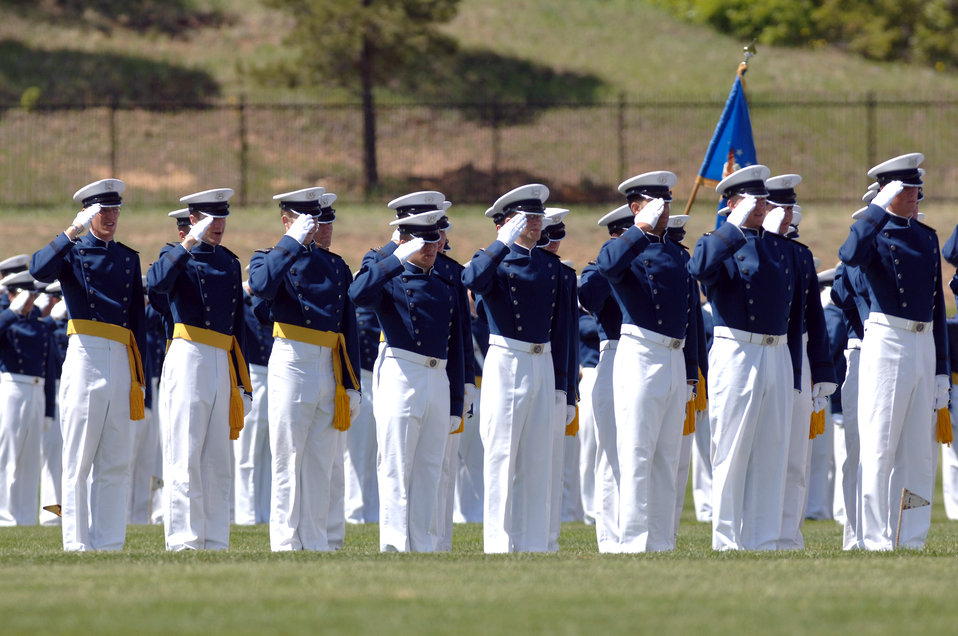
Parade preps Class of 2007 for graduation

Cadets salute during the playing of the National Anthem, during the 2007 Graduation Parade May 29 at the U.S. Air Force Academy in Colorado. The graduation for the U.S. Air Force Academy's Class of 2007 will be held at 10 a.m. May 30 at Falcon Stadium. Secretary of Defense Dr. Robert M. Gates will be the guest speaker. Cadets are exposed to a balanced curriculum that provides a general and professional foundation essential to a career Air Force officer.